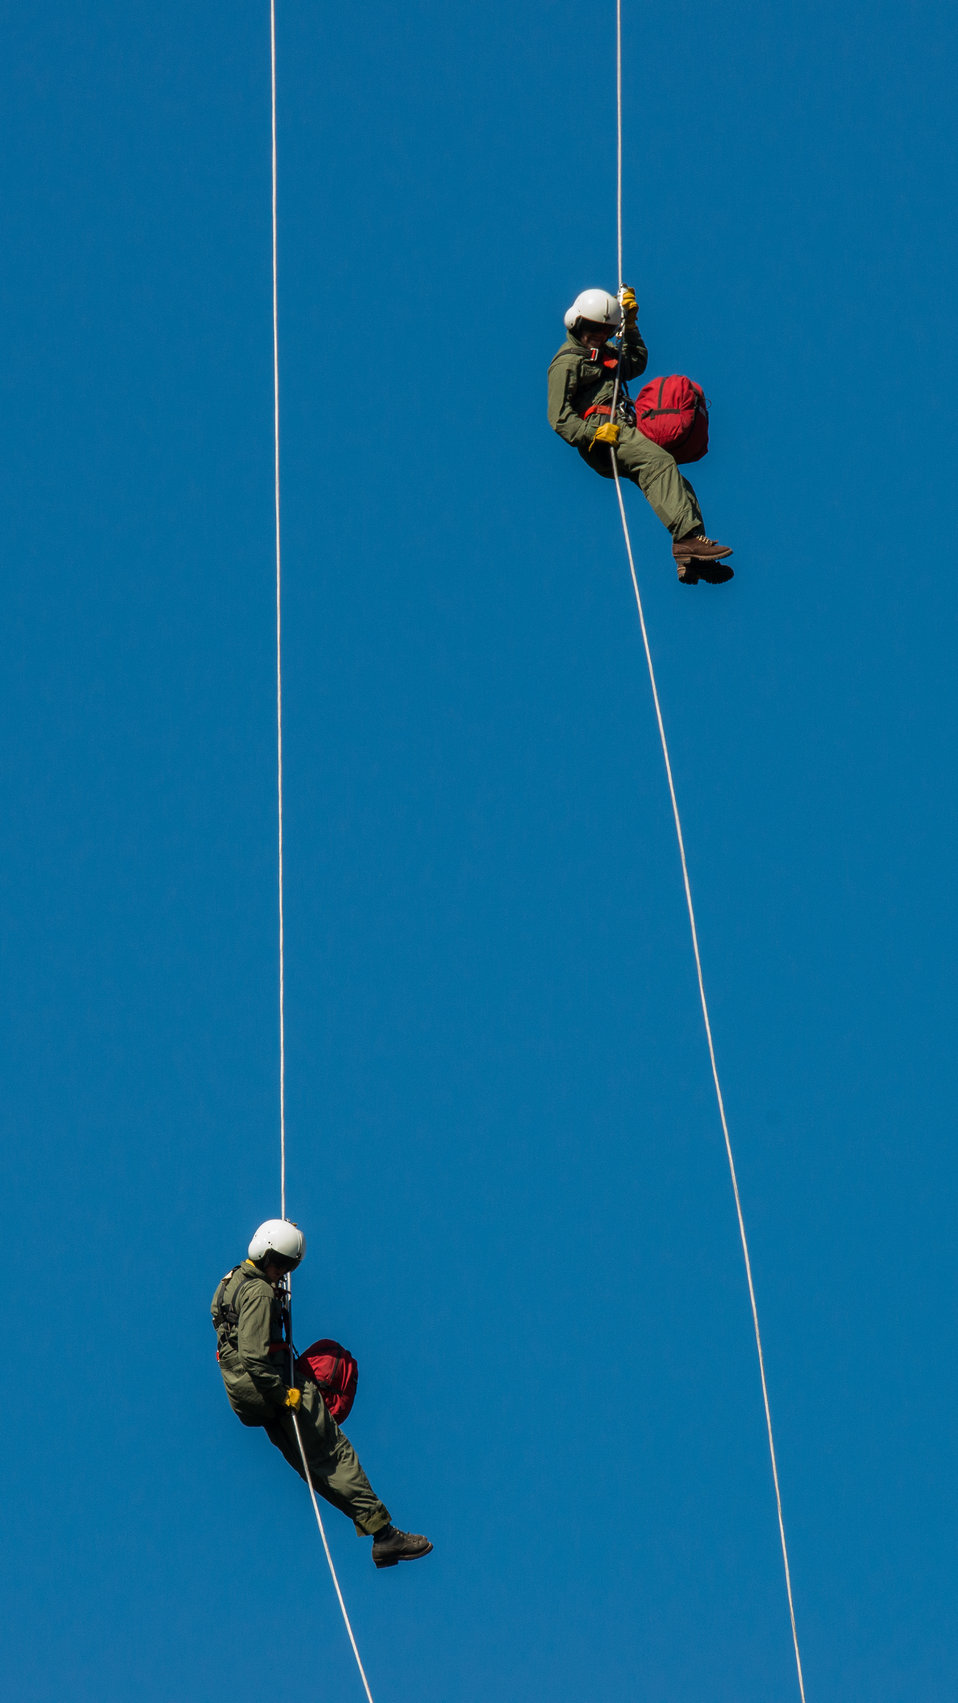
Veteran wildland firefighter rappellers use various techniques to negotiate the wind from the helicopter rotor blades above them, and away from tree branches, beside and below, as they perform a controlled and safe rappel at the U.S. Department of Agriculture (USDA) U.S. Forest Service (USFS) National Helicopter Rappel Program’s Rappel Academy at Salmon Air Base in Salmon, ID on Thursday, May 15, 2014. From May 12, 2014, 72 veteran rappellers from all over the nation, 30 support staff, and three helicopters with flight crews attend the training at Salmon Air Base. Participants will rappel into the Perreau Creek area. The annual training is delivered in accordance with the National Rappel Operations Guide; strengthen leadership, teamwork, and communications within the rappel community, and produces quality aerial delivered firefighters for use in fire and aviation operations. The USDA Forest Service National Helicopter Rappel Program’s primary mission is initial attack. Rappel crews may be utilized for large fire support, all hazard incident operations, and resource management objectives.